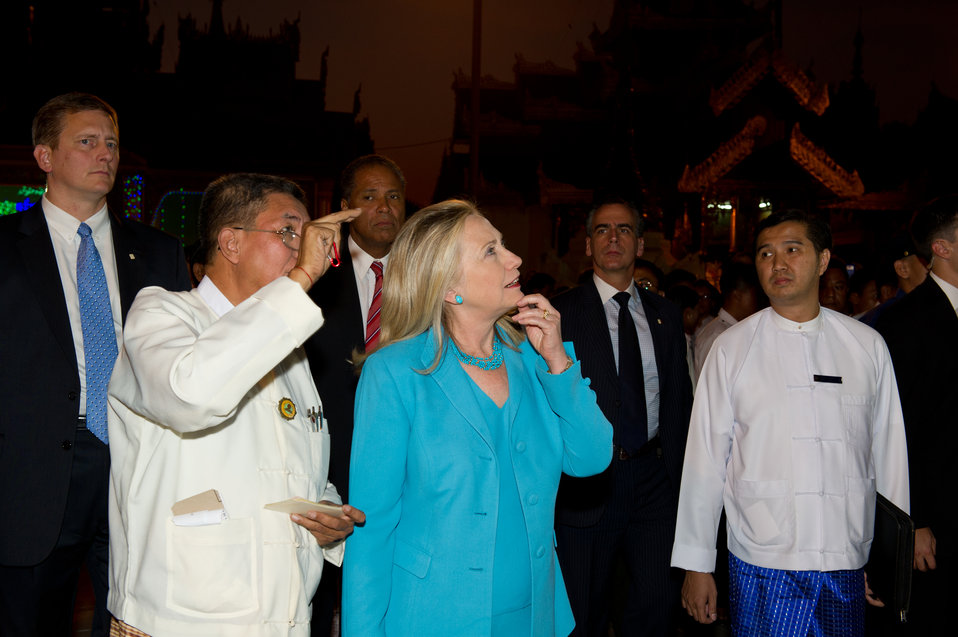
Secretary Clinton Visits the Shwedagon Pagoda

U.S. Secretary of State Hillary Rodham Clinton visits the Shwedagon Pagoda in Rangoon, Burma, on December 1, 2011.